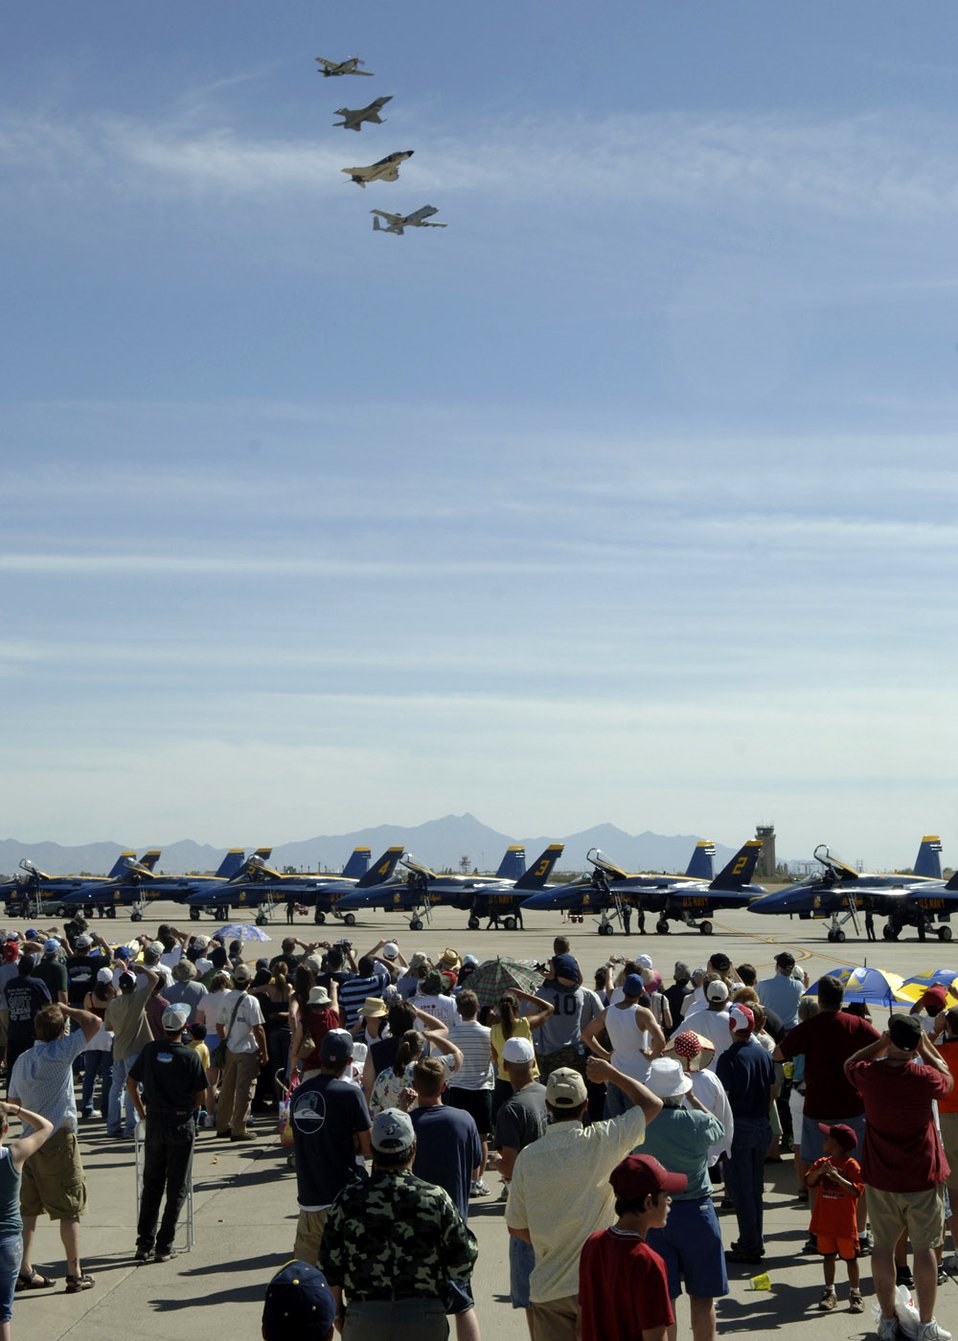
Air show features '80 Years of Airpower for America'

The Heritage Flight -- a P-51 Mustang, an F-16 Fighting Falcon, an F-4 Phantom, and an A-10 Thunderbolt II -- fly by March 18 during the 2007 Aerospace and Arizona Days air show at Davis-Monthan Air Force Base, Ariz. The two-day air show offered public an up-close look at military and civilian aerial demonstrations and static-display aircraft from across the U.S. The theme for this year's show was